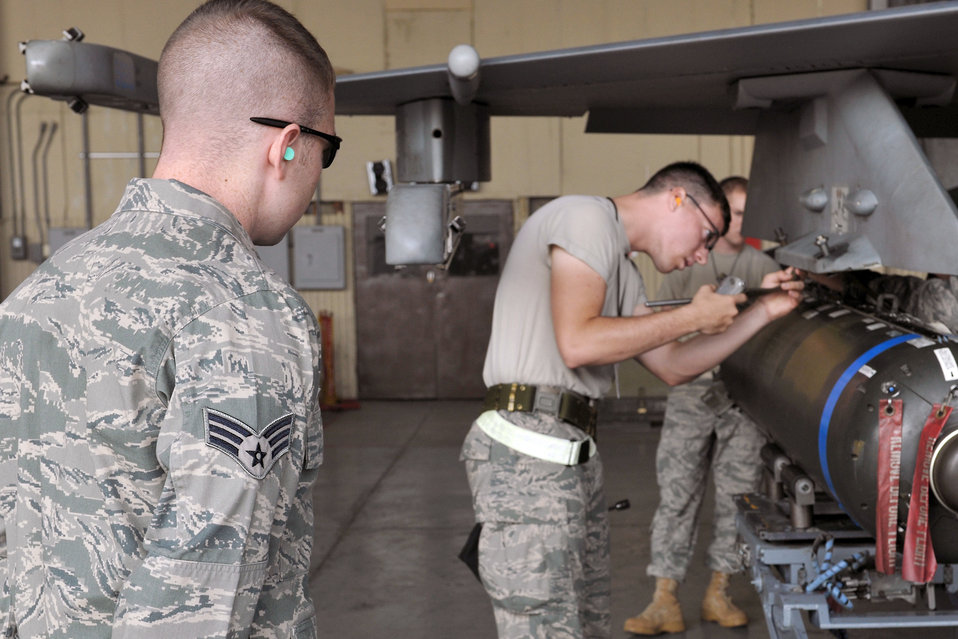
Load crew evaluation

Senior Airman Ryan Castle evaluates a load crew June 28, 2011, at Kunsan Air Base, South Korea. Airman Castle is a load crew evaluator assigned to the 8th Maintenance Operations Squadron.